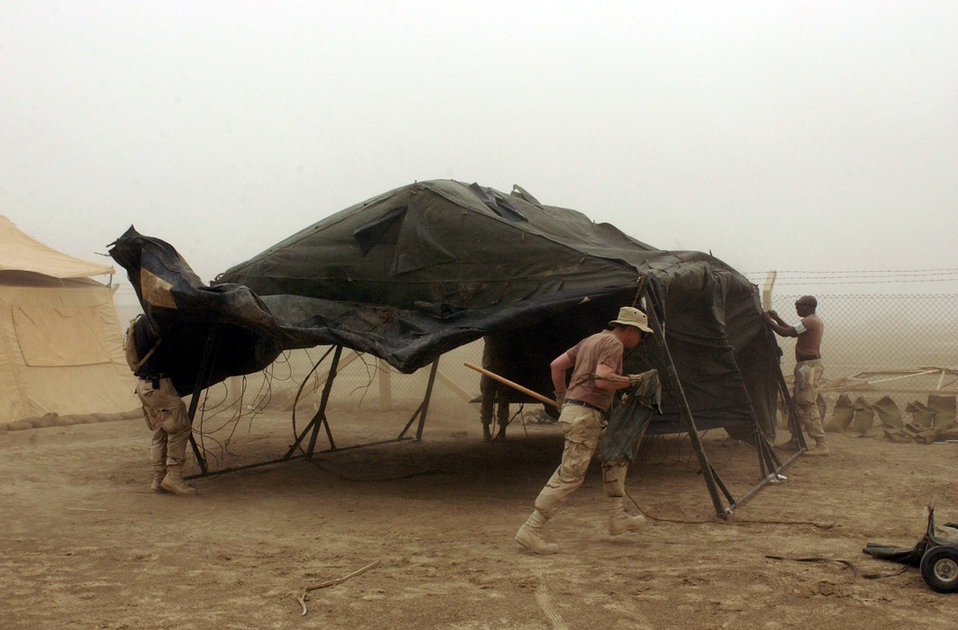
Joint effort stands up Iraqi air base

OPERATION IRAQI FREEDOM - Airmen from the 5th Combat Communications Group pitch in to set up a tent during a sandstorm at Tallil Air Base in southern Iraq on April 16. The 5th CCG deployed from Robins Air Force Base, Ga., to Tallil recently.